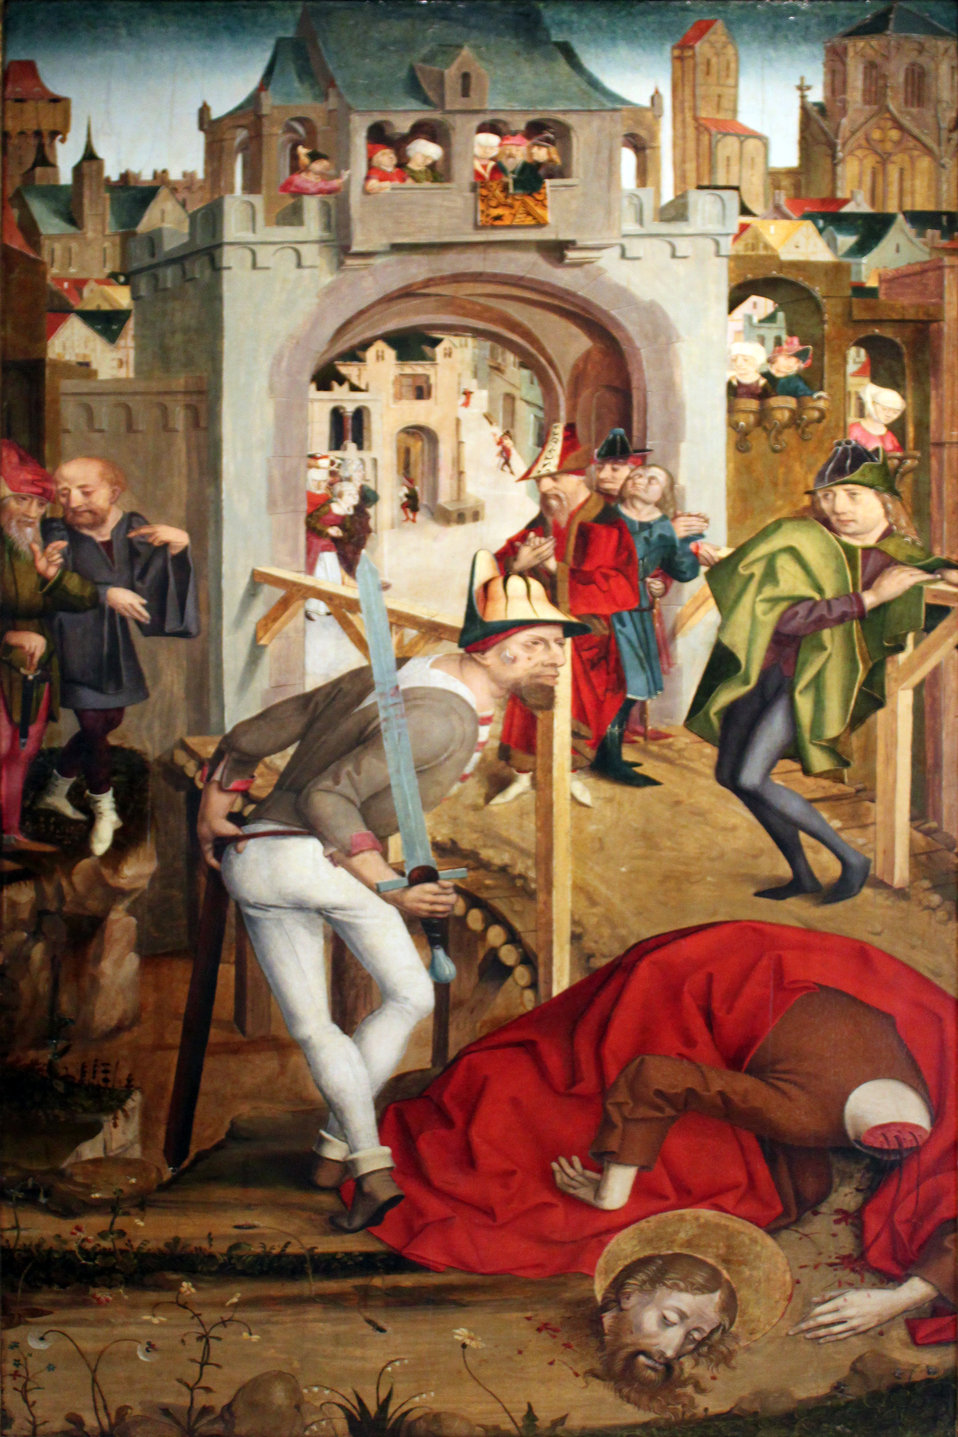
1490 Beheading of John the Baptist anagoria